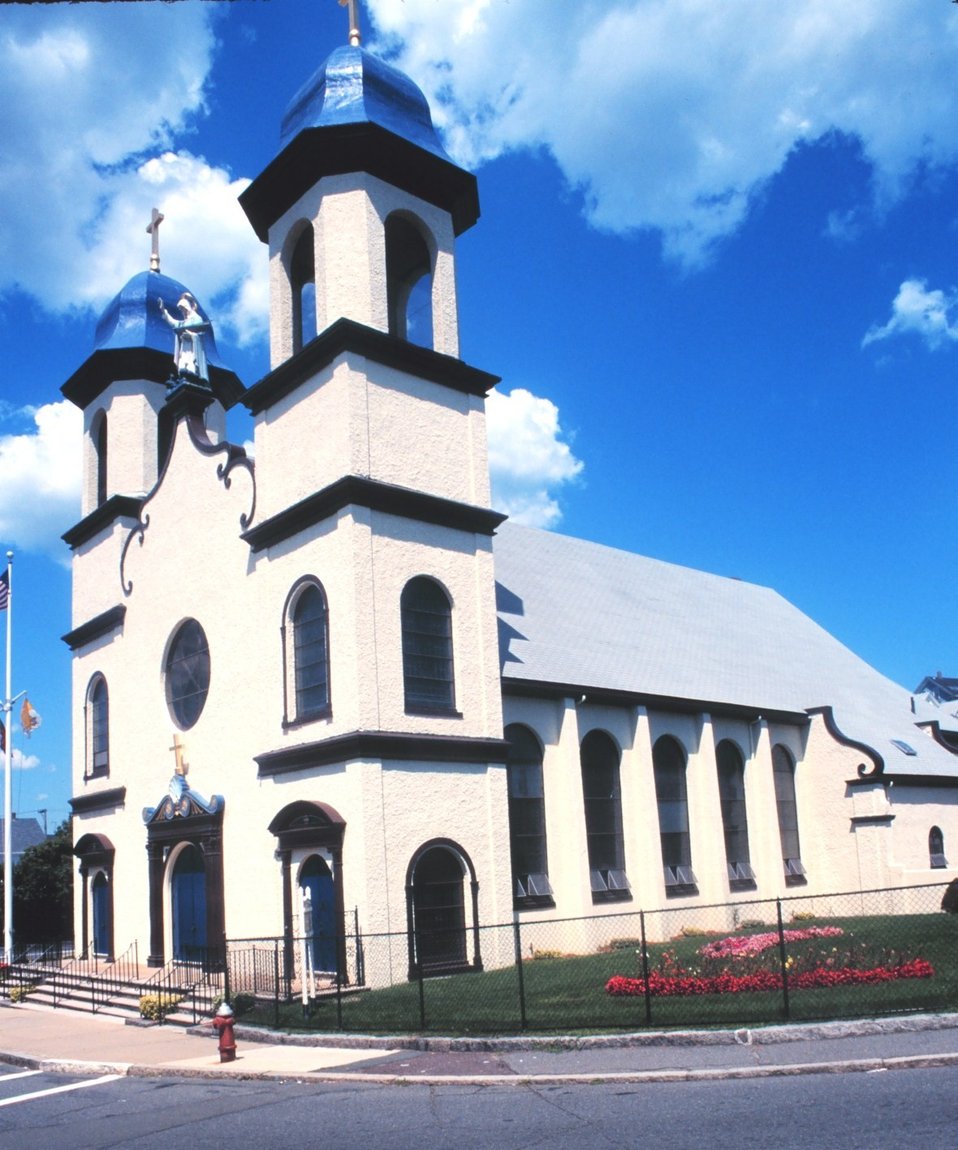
A beautiful church at New Bedford.